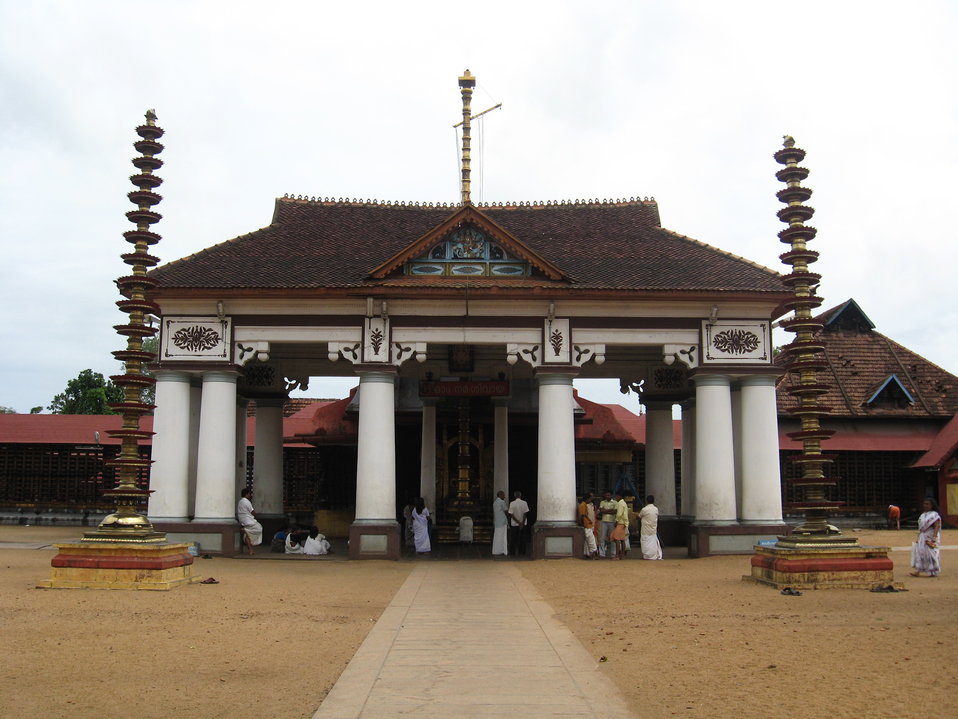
Vaikom Temple മലയാളം: വൈക്കം മഹാദേവക്ഷേത്രം